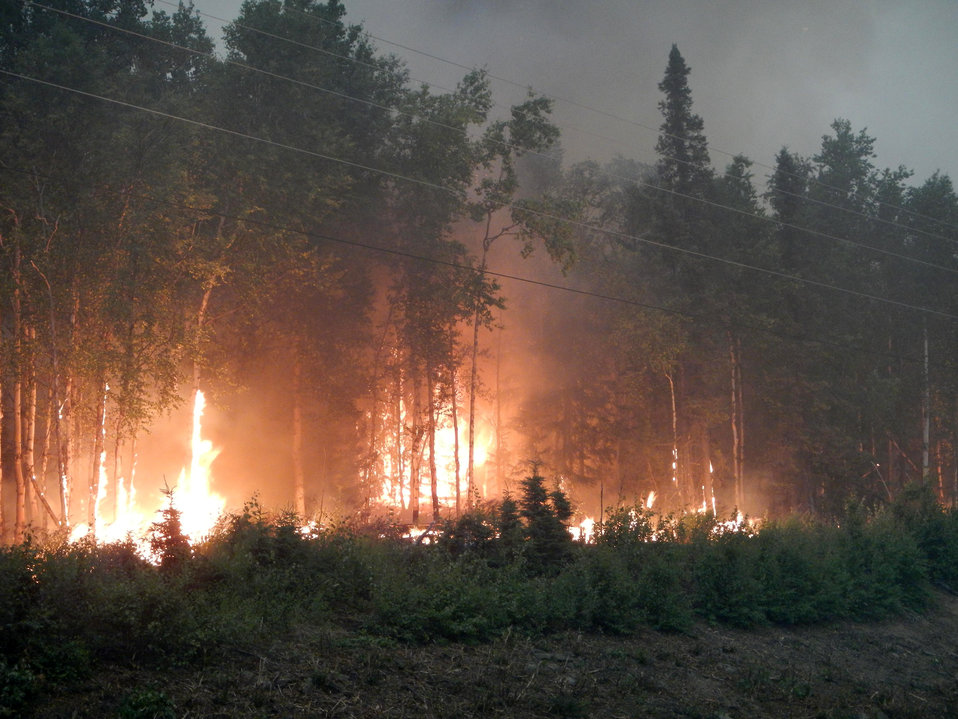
A stand of trees burns at the Stewart Creek Fire. The Stewart Creek Fire located 25 miles east of North Pole, AK began on Jun. 19, 2013 due to human causes and has consumed an estimated 85, 475 acres. The fire is approximately 57% contained.